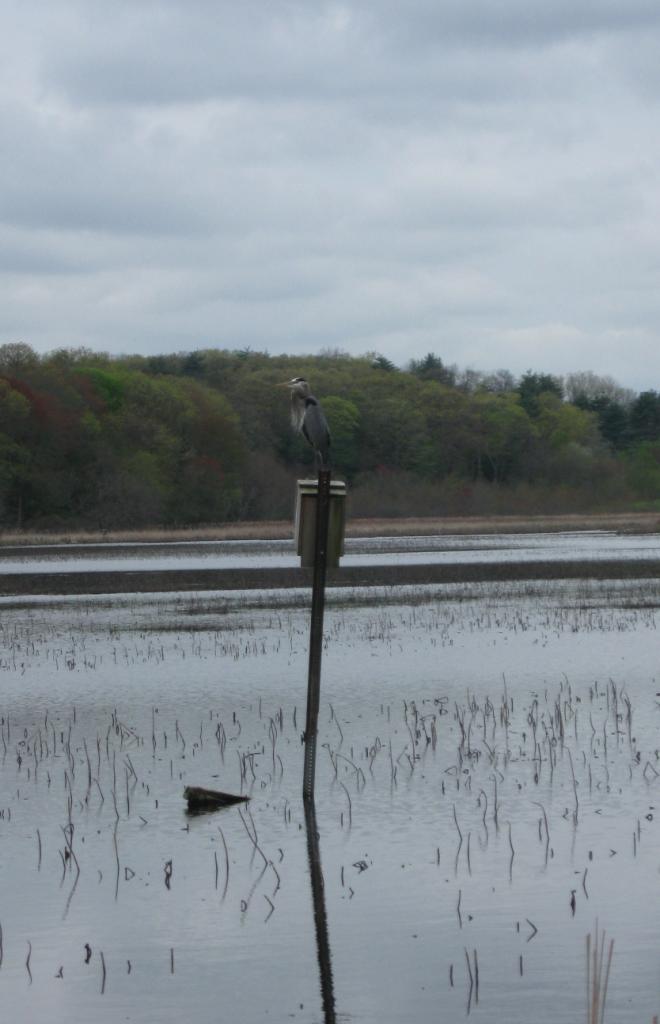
Great blue heron at Eastern Massachusetts National Wildlife Refuge Complex